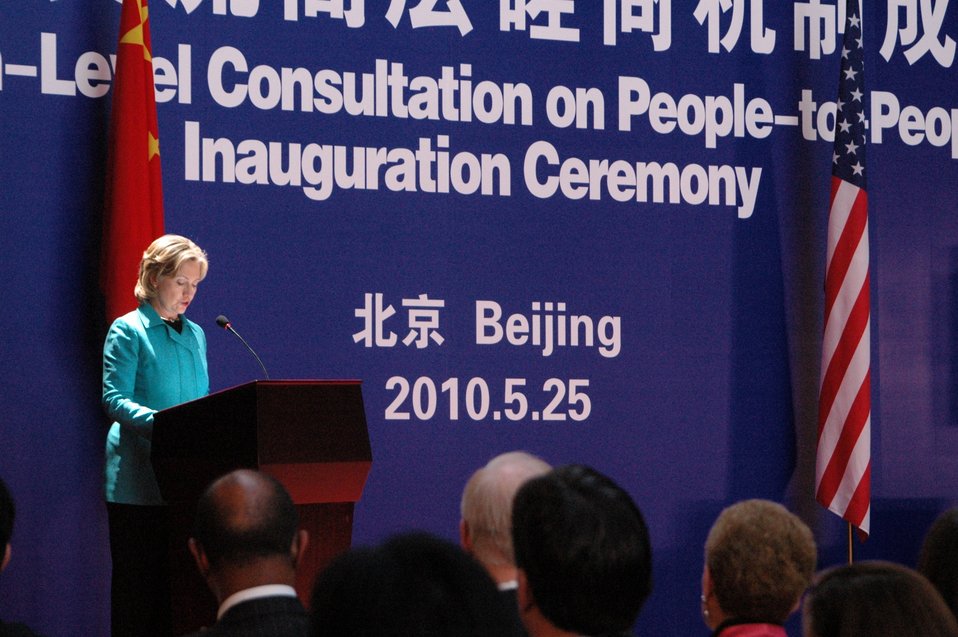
Secretary Clinton Delivers Remarks at the People-to-People Exchange Ceremony

U.S. Secretary of State Hillary Rodham Clinton delivers remarks at the U.S.-China Consultation on People-to-People Exchange ceremony at the National Center for the Performing Arts in Beijing, China, May 25, 2010.